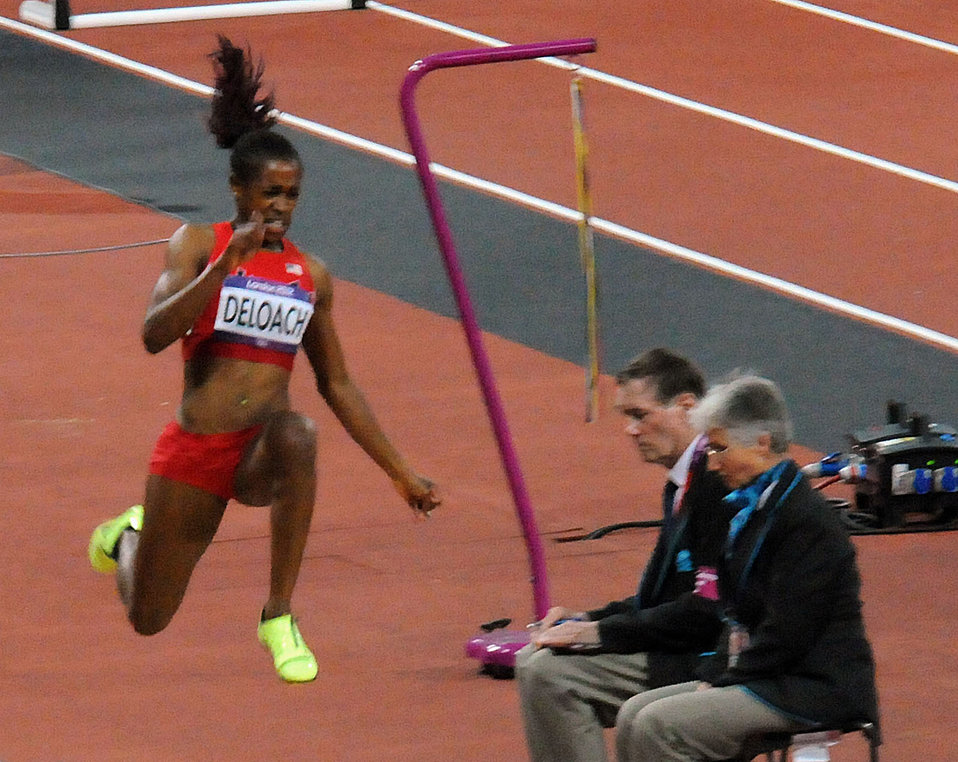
2012 Olympics

Janay DeLoach prepares to make her third long jump Wednesday evening at Olympic Stadium in London. She finished the night with a bronze medal in the event.